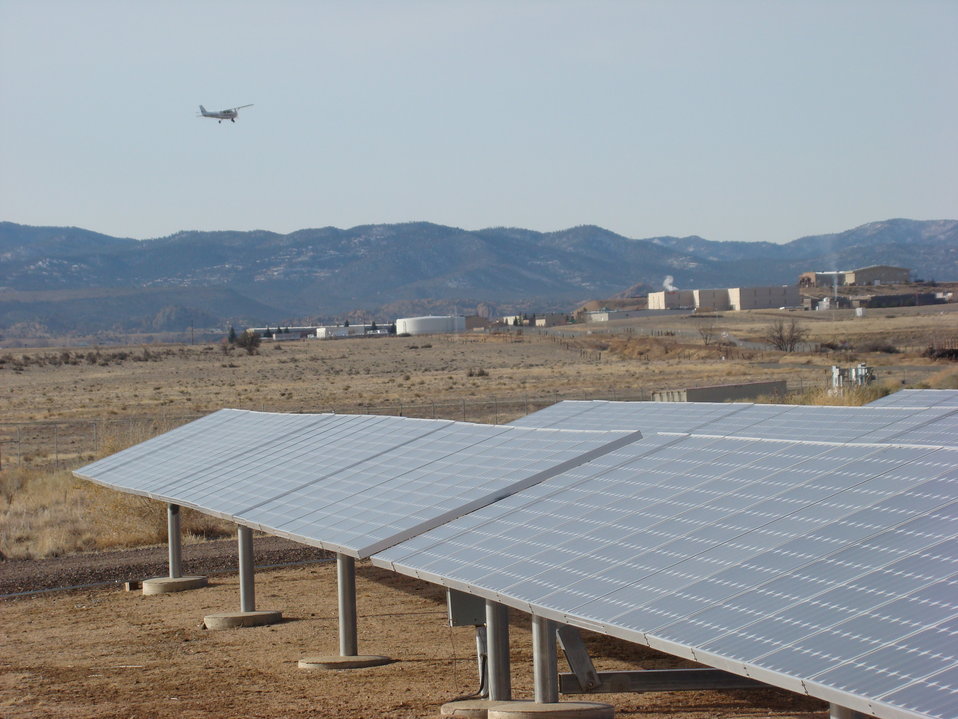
Converting airport grasslands to biofuel, solar or wind production may not only provide more environmentally sound alternative energy sources, but also increase revenue for airports and reduce the local abundance of wildlife hazardous to aircraft. U. S. Department of Agriculture research is helping shed light on this promising concept.